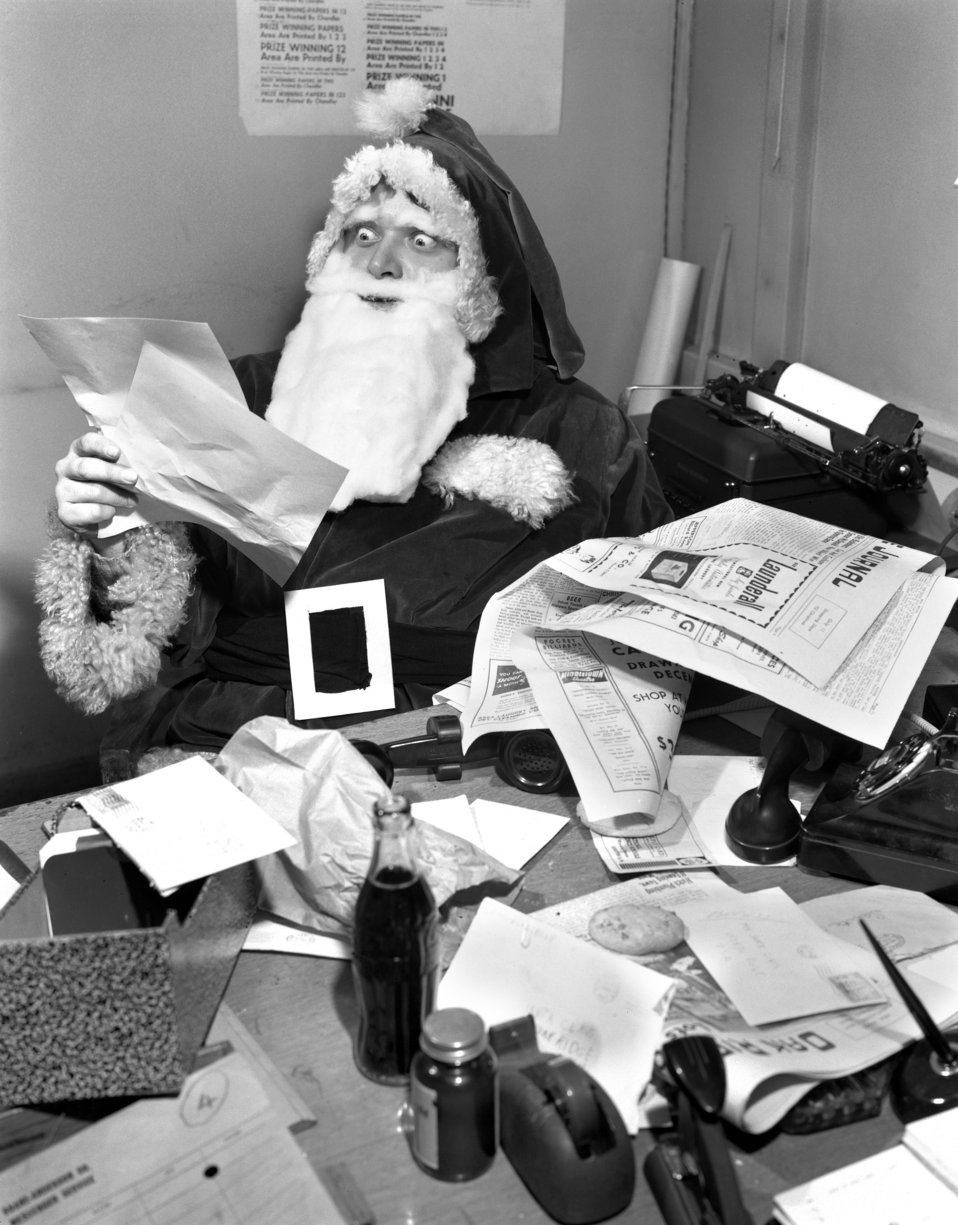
Santa Claus Oak Ridge 1947

4080 DOE Photo Ed Westcott 12-11-1947 Ed Morgan as Santa Claus Oak Ridge Tennessee